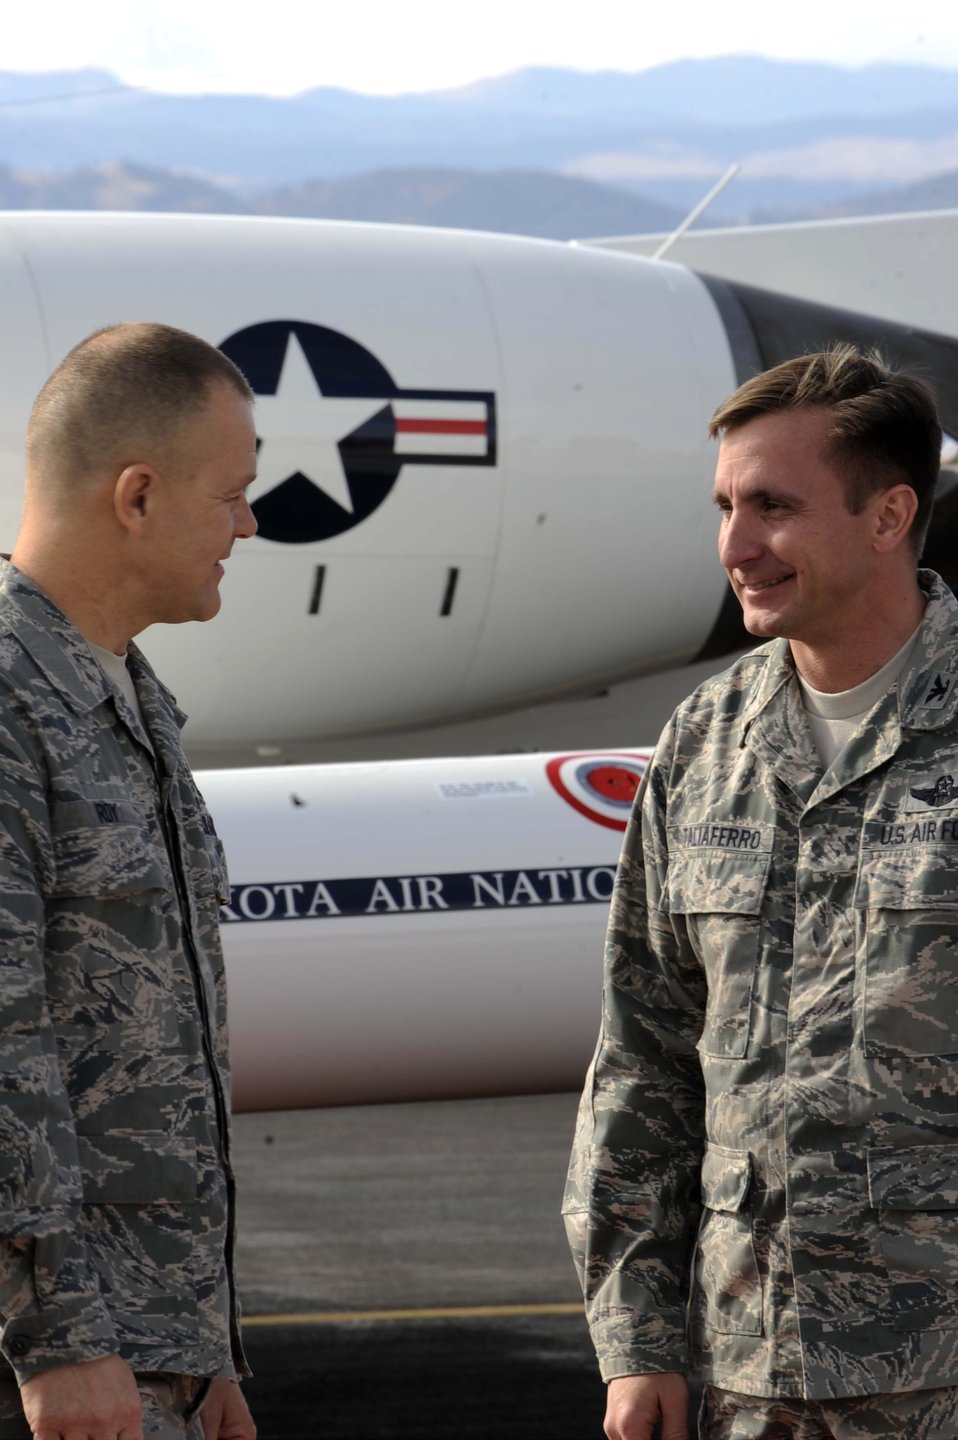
CMSAF visits Ellsworth

Col. Jeffrey Taliaferro (right), 28th Bomb Wing commander, bids farewell to Chief Master Sgt. of the Air Force James A. Roy, Oct. 22, 2009, following his two-day visit to Ellsworth Air Force Base, S.D. During the visit, Chief Roy met with Airmen at different venues throughout the base and discussed education, training and deployments and other important Air Force topics.